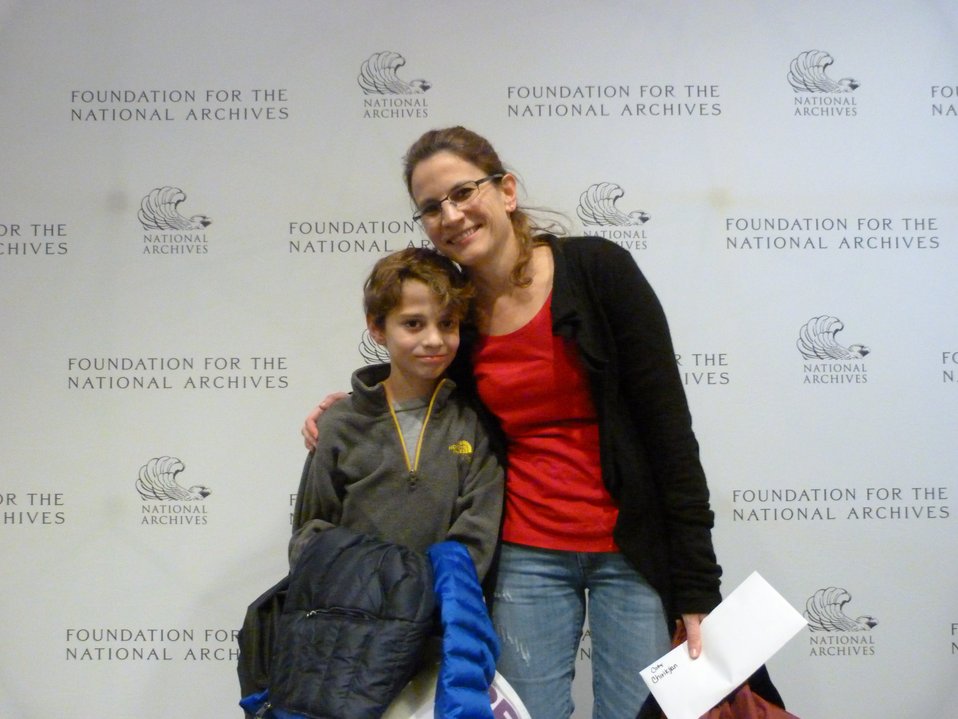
Rotunda Sleepover

Rotunda Sleepoverr; Photo provided by The Foundation for the National Archives